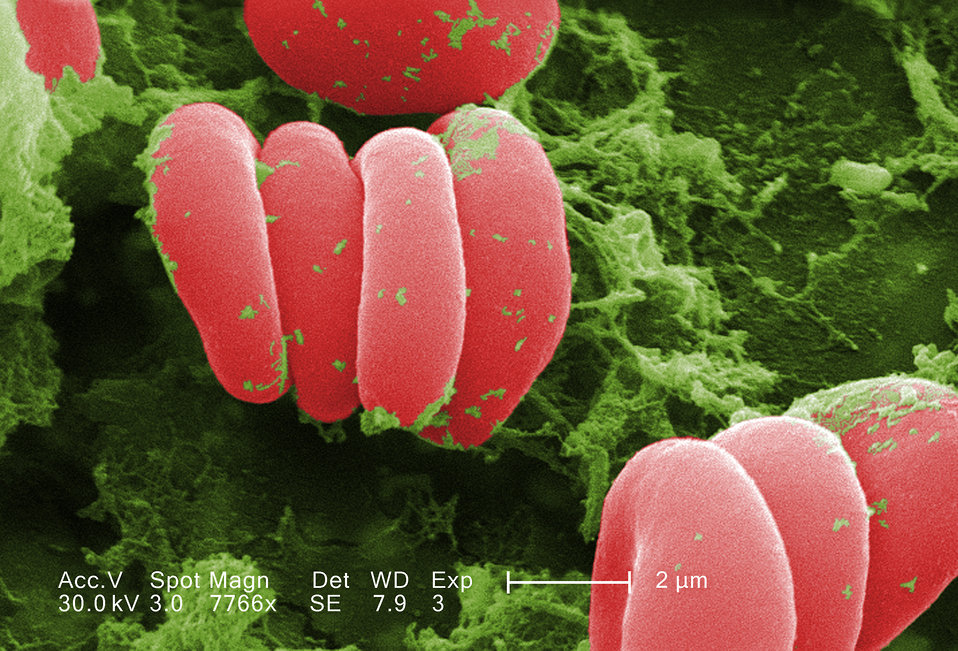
This scanning electron micrograph (SEM) depicted a closer view of a number of red blood cells found enmeshed in a fibrinous matrix on the luminal surface of an indwelling vascular catheter; Magnified 7766x. In this instance, the indwelling catheter was a tube that was left in place creating a patent portal directly into a blood vessel. Some of the erythrocytes are grouped in a stack known as a 'Rouleaux formation'. See PHIL 7318 for a black and white version of this SEM.